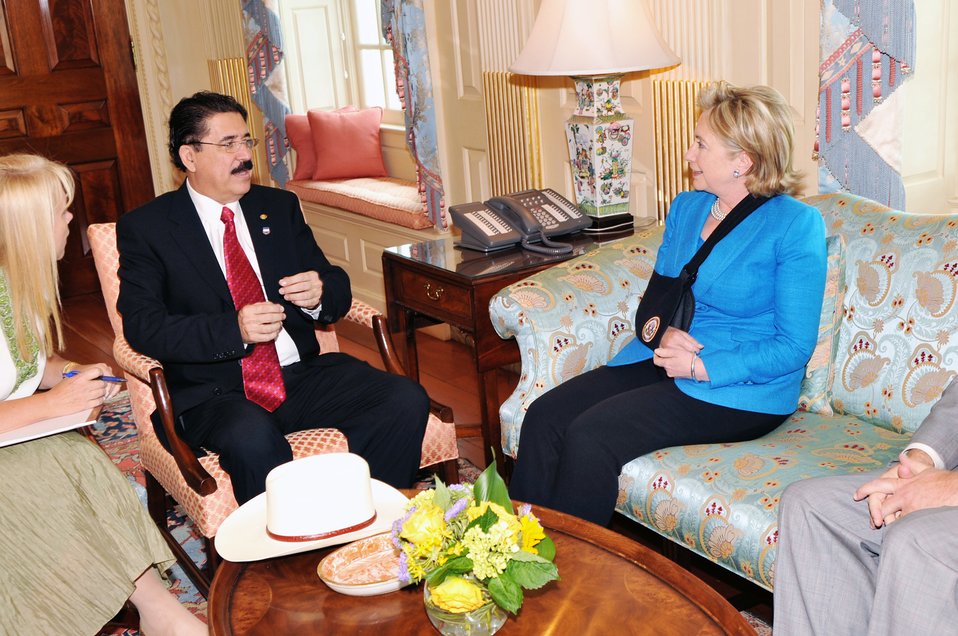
Secretary Clinton Meets With Honduran President

U.S. Secretary of State Hillary Rodham Clinton meets with His Excellency Jose Manuel Zelaya, President of the Republic of Honduras at the U.S. Department of State in Washington, DC July 7, 2009.